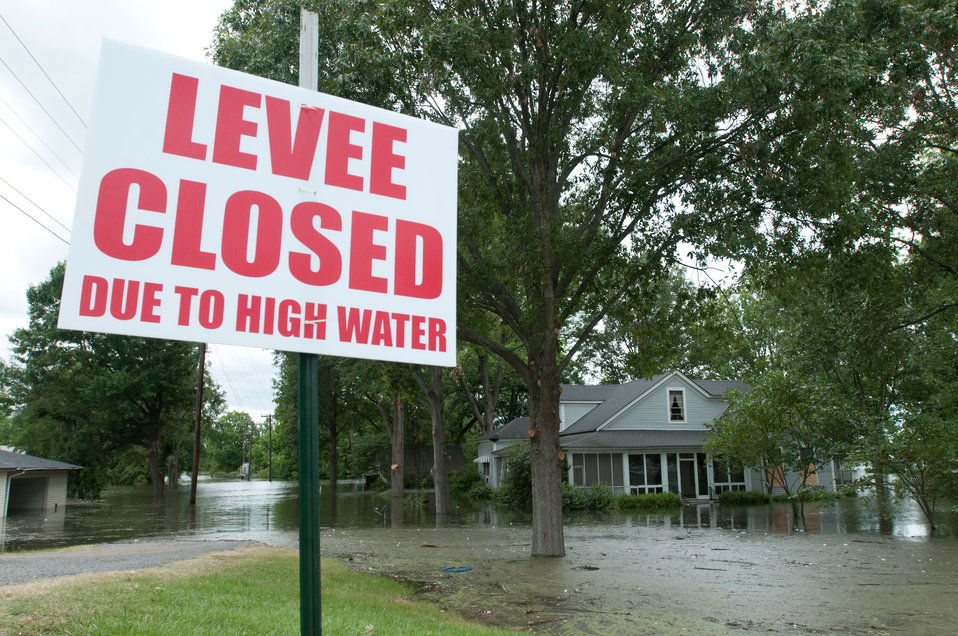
The Levee Closed sign warns the public about Mississippi River floodwaters that have pushed into Yazoo River and into Satartia, MS on Monday, May 16. 2011. The community of 96 evacuated.